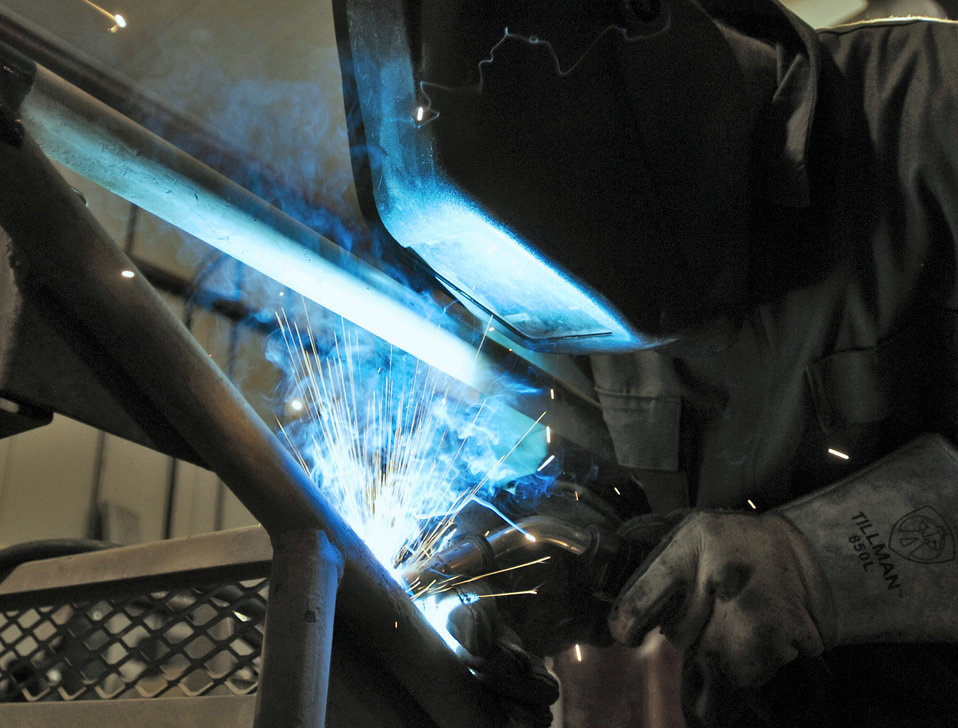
Showing his metal

Senior Airman Joseph Krafchak uses an arc welder to repair an aircraft maintenance stand Aug. 2 at Joint Base Balad, Iraq. Aircraft maintainers use the stands to perform maintenance on F-16 Fighting Falcons. Airman Krafshak, a metals technician journeyman with the 332nd Expeditionary Maintenance Squadron here, is deployed from Shaw Air Force Base, S.C. His hometown is Lompoc, Calif.